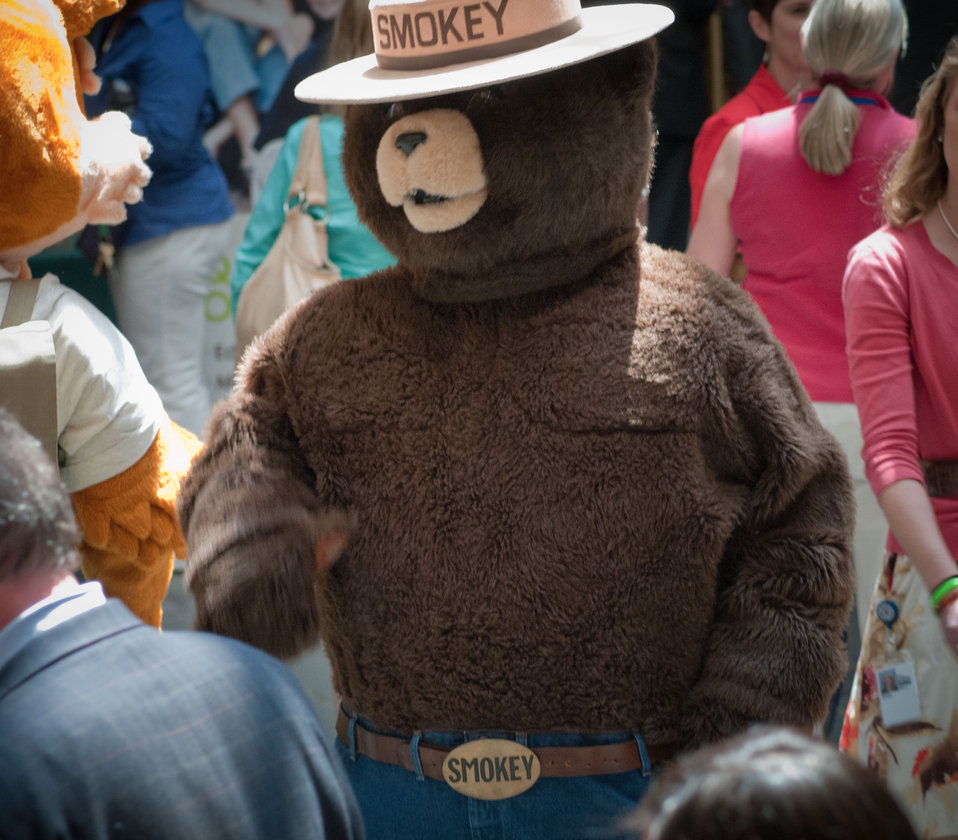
Smokey Bear at the International Year of Forests (IYOF) celebration on Friday, June 3, 2011 on the Patio of the Whitten Building, U.S.Department of Agriculture in Washington, DC.